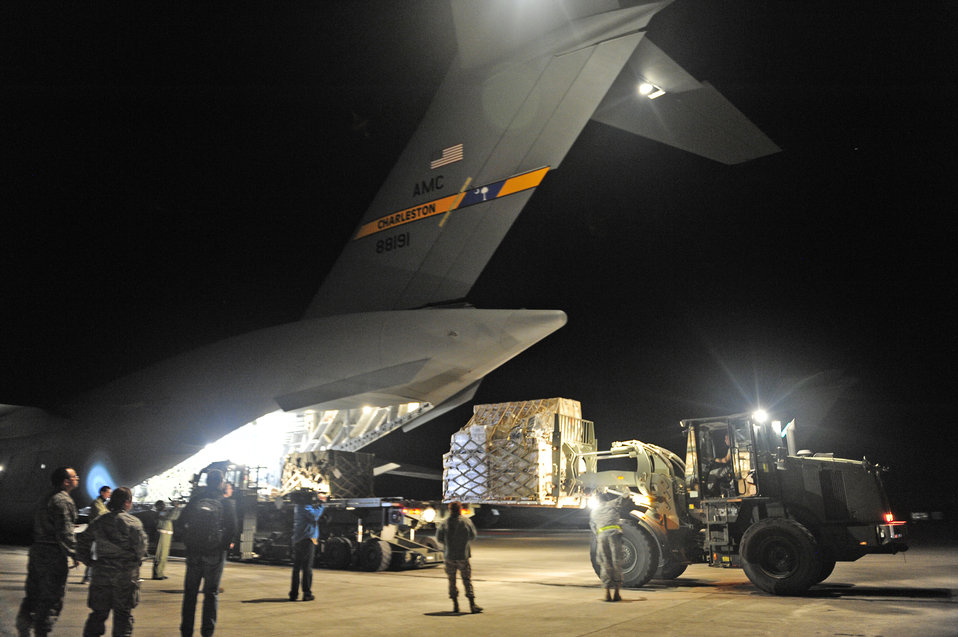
Haiti Earthquake Relief

Airmen offload cargo from a C-17 Globemaster III aircraft from Charleston Air Force Base, S.C., Jan. 15, 2010, at the Port-au-Prince airport in Haiti in support of relief efforts in the aftermath of a devastating earthquake. The Airmen are assigned to the 621st Contingency Response Wing at Joint Base McGuire-Dix-Lakehurst, N.J.